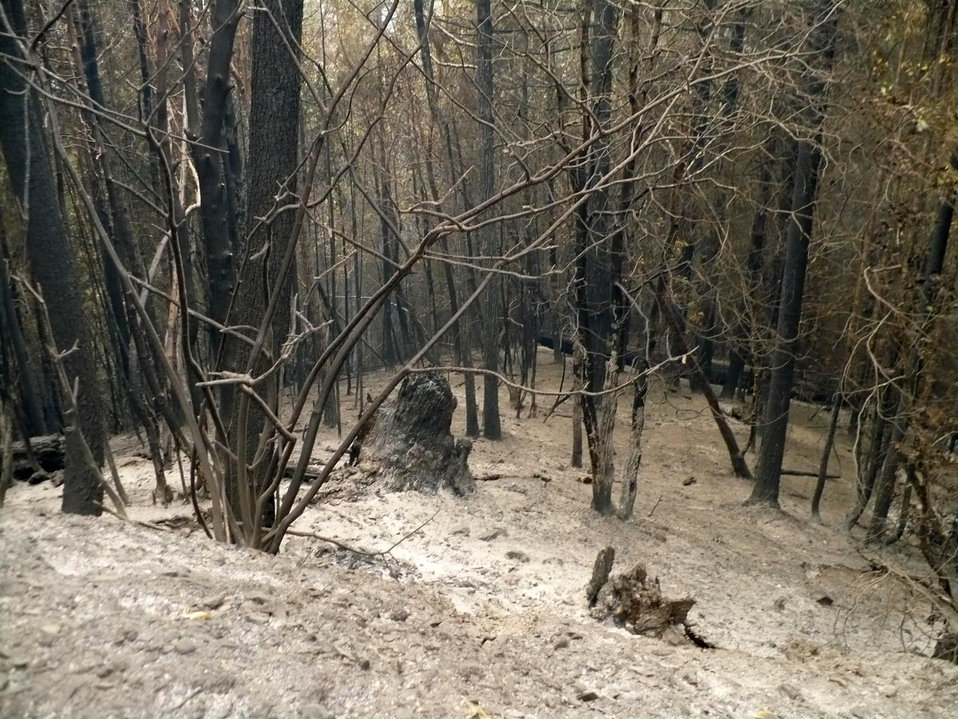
The burned and charred remains of forestland at the Brimstone Fire in Oregon. The Brimstone Fire near Merton, OR began on Jul. 26, 2013 began by lightning consumed 2,372 acres and is 100% contained.